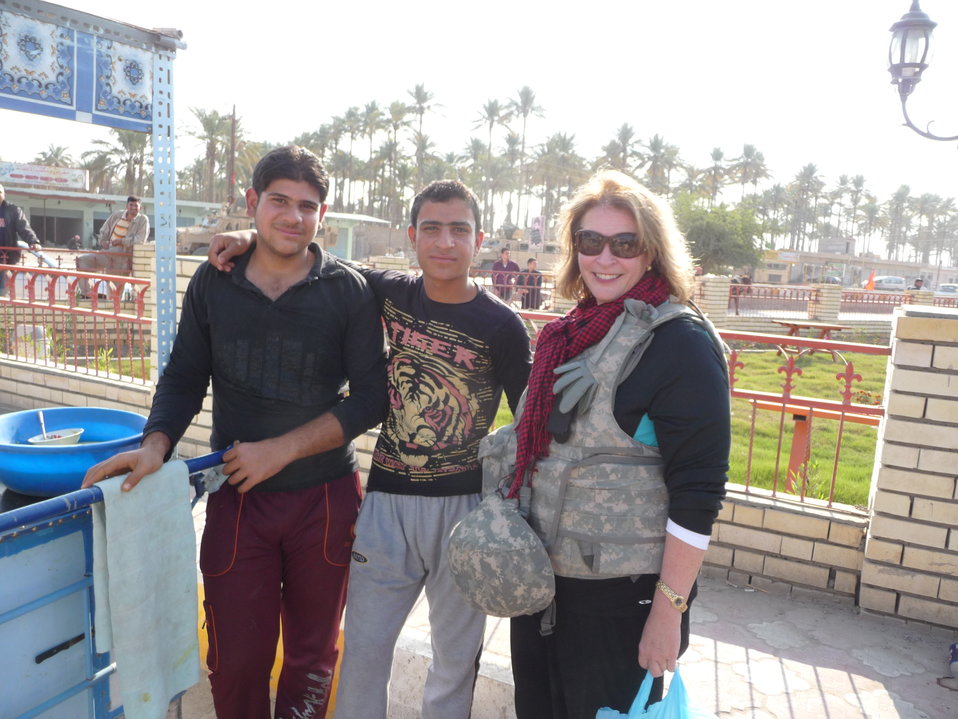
Greta Holtz Speaks With Iraqis

Greta Holtz (Embassy Baghdad) speaks with Iraqis in Aruba Market, Muqdadiya, Iraq, December 2009.